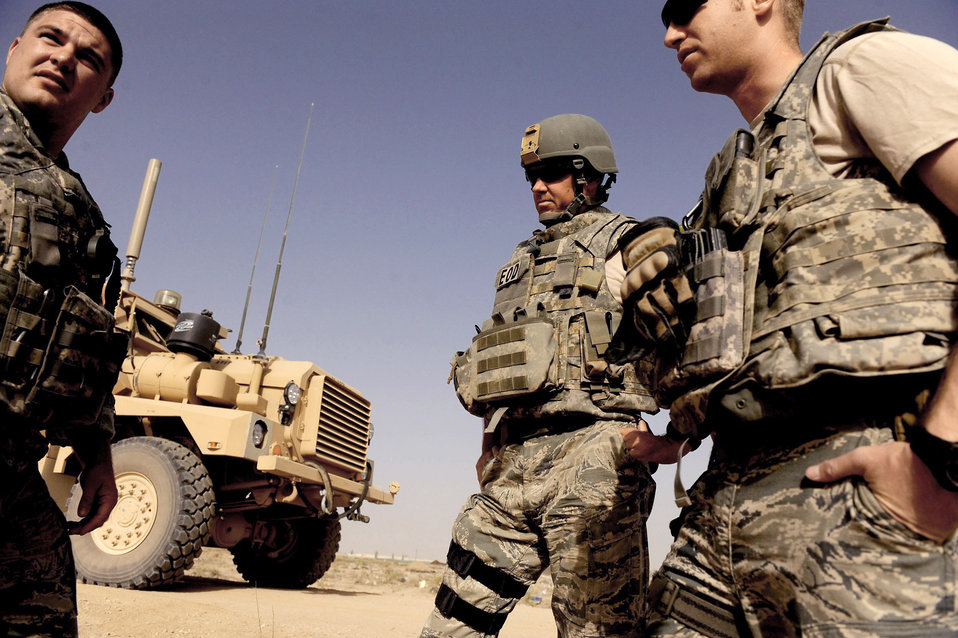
Explosive ordnance Airmen clear the way for Afghan National Army

Tech. Sgt. David Niedzwiadek (left to right), Master Sgt. Donald Moore and Capt. Andrew Clemmensen speak about the day's mission June 4, 2010, in Kandahar City, Afghanistan. The The Airmen are assigned to explosive ordnance disposal technicians assigned to the 755th Air Expeditionary Squadron, Operating Location-Bravo explosive ordnance disposal team.